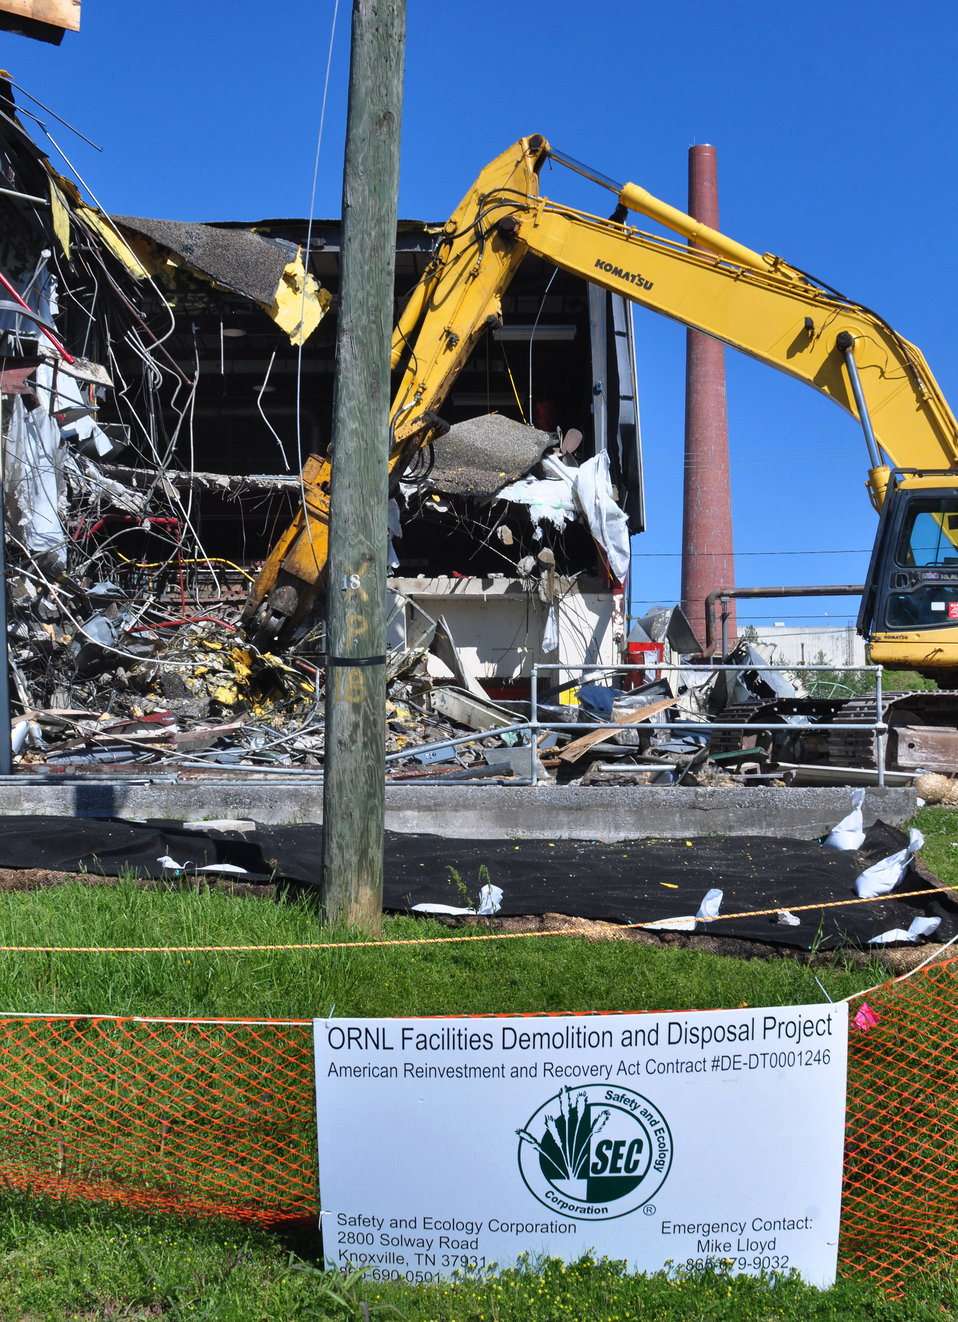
DandD work on Bld. 3508 at Oak Ridge National Lab.

12-077-36 DOE photo by Lynn Freeny

Oak Ridge Tennessee 4-13-2012